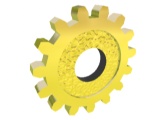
sk:Kategória:Značky a logá sk:Kategória:Presunúť na Commons